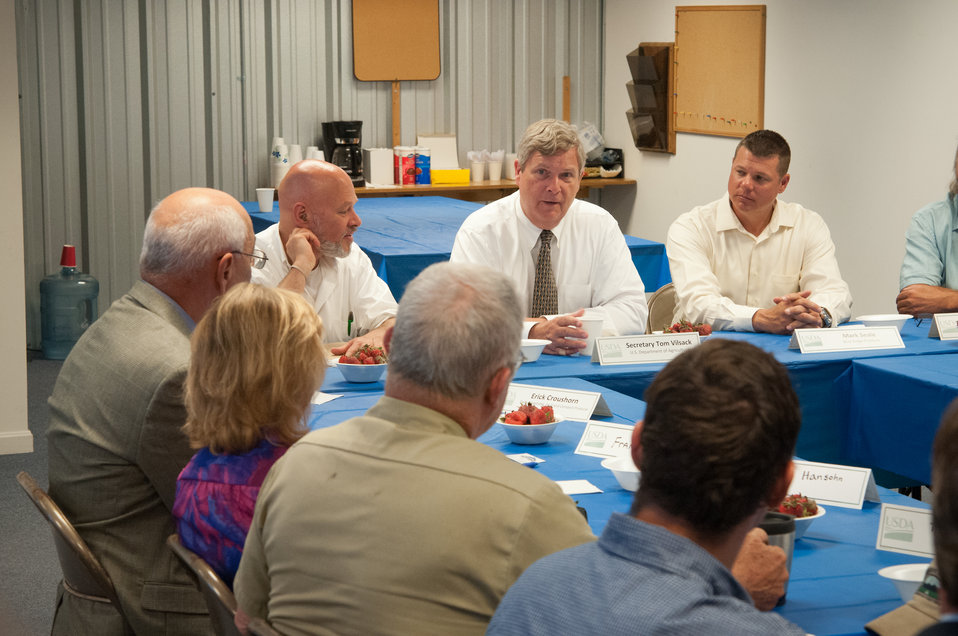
Agriculture Secretary Tom Vilsack held a round table discussion with local producers to listen to the producers concerns and answer their questions at Blue Ridge Produce in Elkwood, VA on Thursday, May 30, 2013. Blue Ridge Produce is a local food hub aggregating Virginia-grown fruits and vegetables for sale to wholesale customers in the Capitol region and strives to build a value-based relationship with Virginia growers of all sizes by handling the marketing and logistics to get their produce from farm to customer.